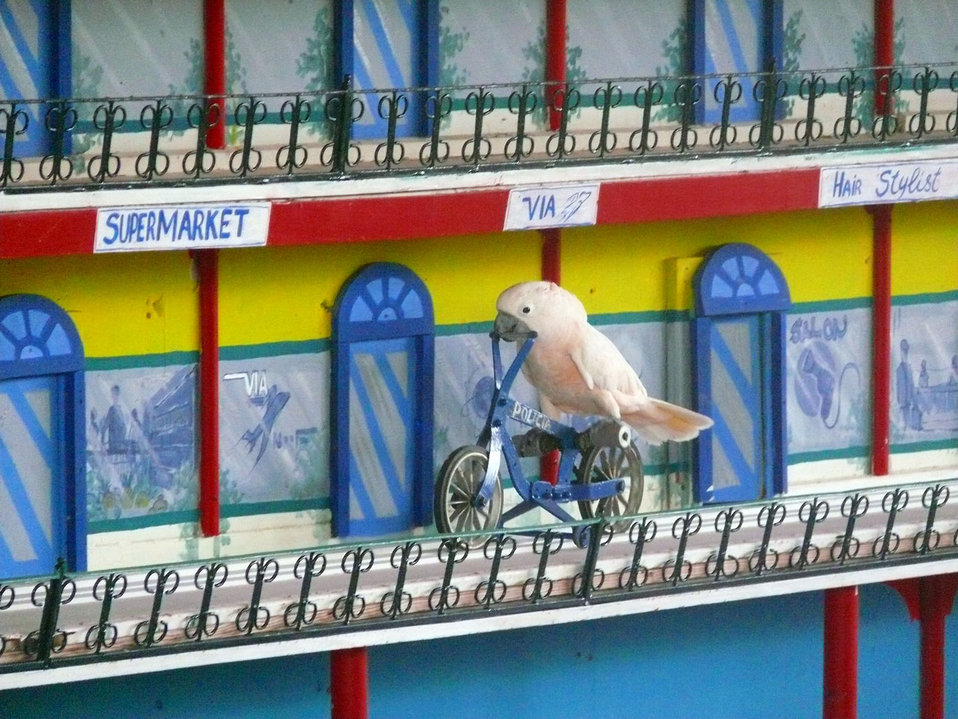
Parrot's show.